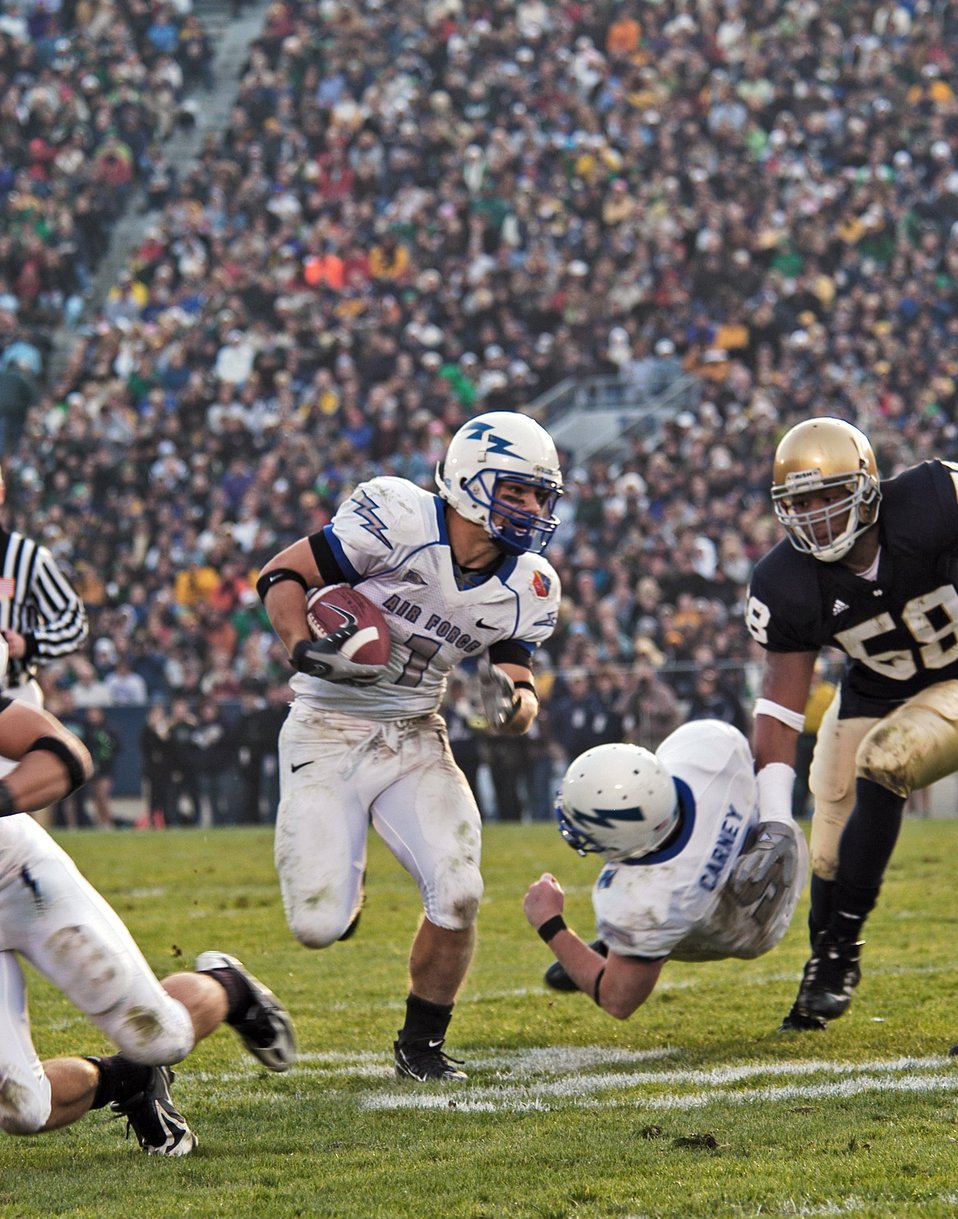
Football: Falcons outfight Irish, 41-24

U.S. Air Force Academy Falcon z-back Chad Hall finds running room thanks to a block by quarterback Shaun Carney on Fighting Irish outside linebacker Brian Smith, 58, during Air Force's 41-24 win Nov. 10 at Notre Dame Stadium in Indiana. Hall carried a game-high 32 times for 142 yards, an average of 4.4 yards per carry